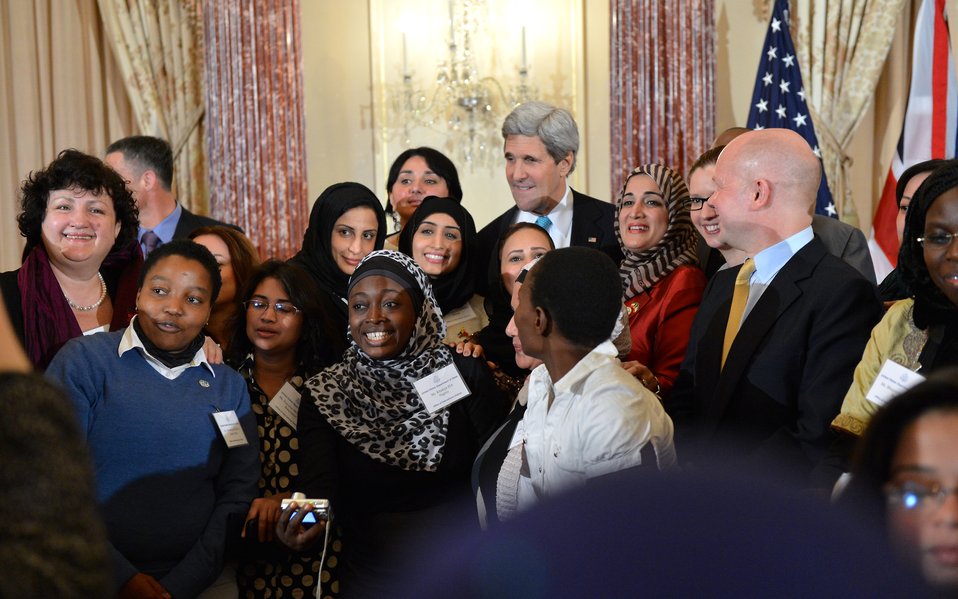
Secretary Kerry and U.K. Foreign Secretary Hague Pose for a Photo

U.S. Secretary of State John Kerry and U.K. Secretary of State for Foreign and Commonwealth Affairs William Hague pose for a photo after hosting a discussion on ending and preventing sexual violence in conflict situations at the U.S. Department of State in Washington, D.C., on February 25, 2014.